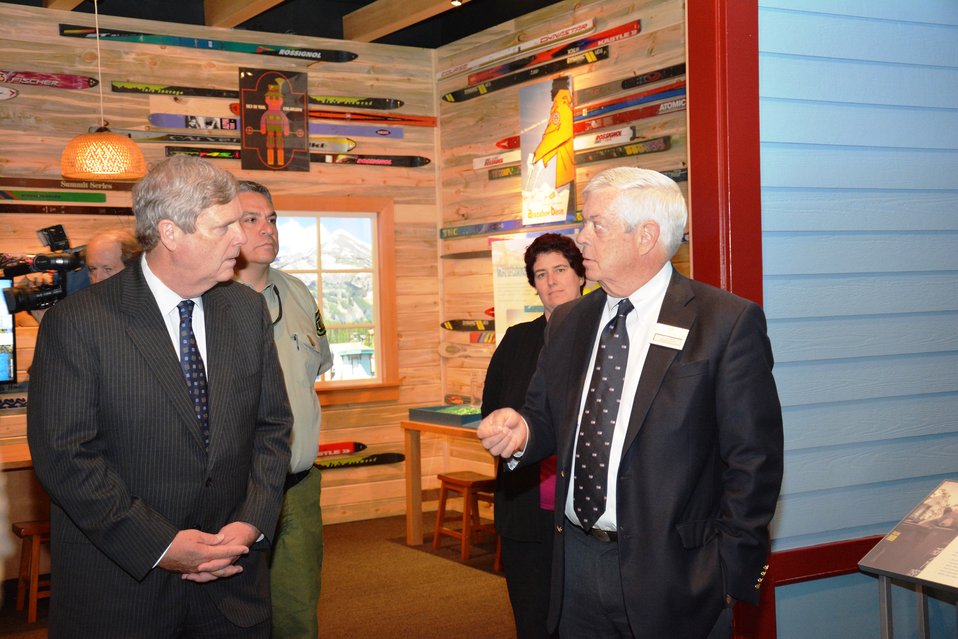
Agriculture Secretary Tom Vilsack speaks with History Colorado President and CEO, State Historic Preservation Officer Ed Nichols at the Mountain Pine Beetle Exhibit at the History Colorado Center in Denver, CO on May 20, 2014.